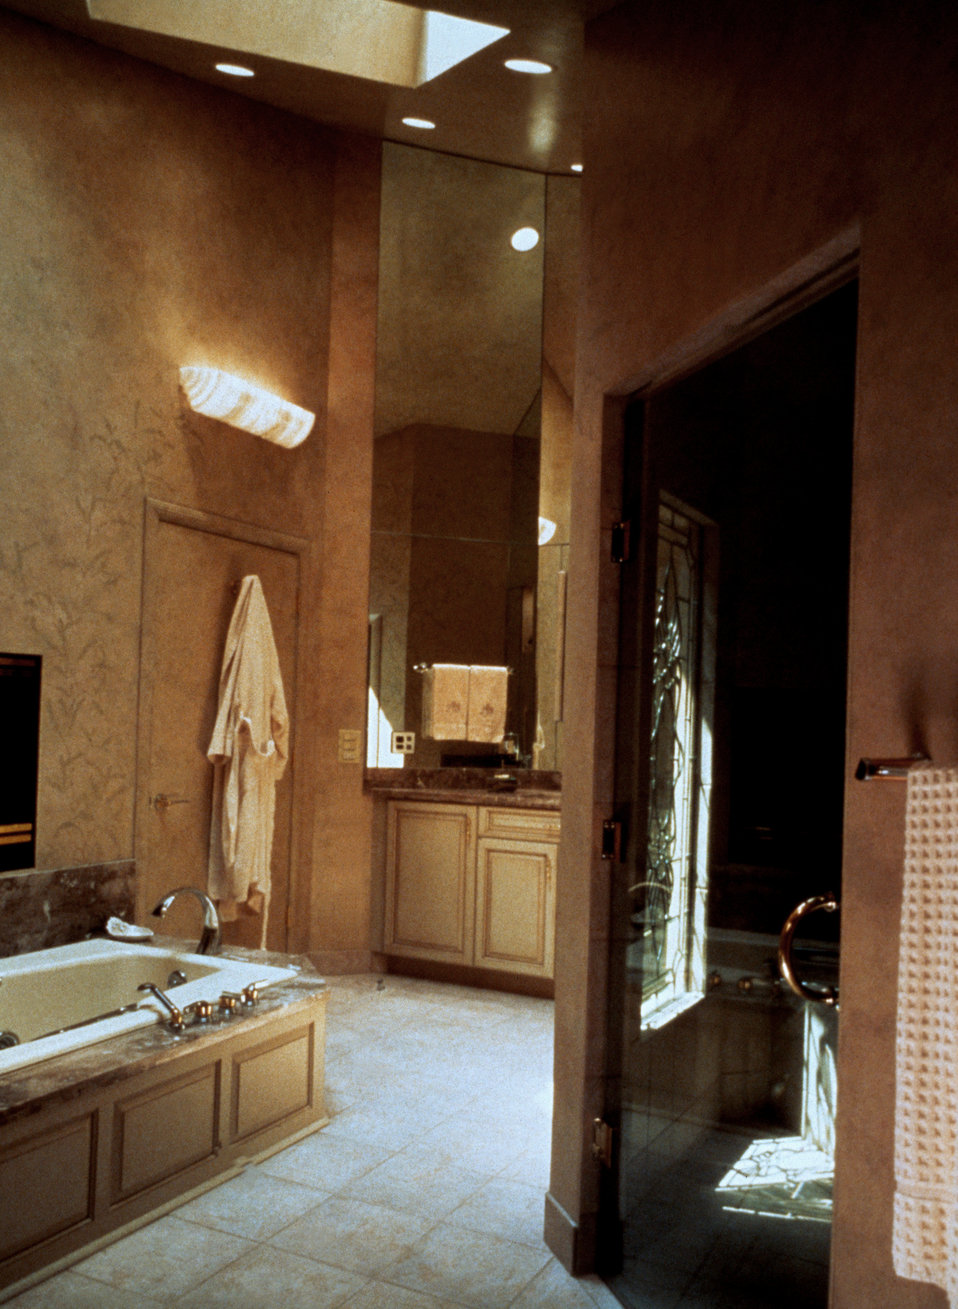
This was one of three images (PHIL# 9198 - 9200), depicting a modern high-end bathroom design, which took into account the needs of the mobility-impaired, thereby, making an overall more accommodating facility for all who might make use of this bathroom. Included was plenty of maneuvering room around the toilet and bidet, while the wall hung sink provided ample knee space for those who might be seated in a wheelchair. This design also showed that the inclusion of such accommodating features need not detract from the design's aesthetic appeal.